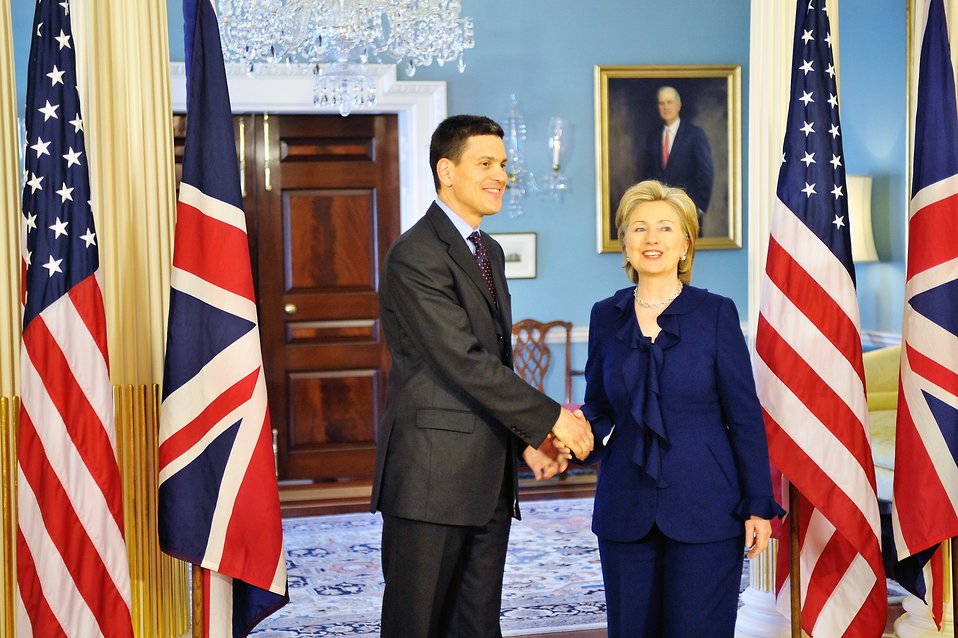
Secretary Clinton Meets With United Kingdom Foreign Minister

U.S. Secretary of State Hillary Rodham Clinton hosts a bilateral meeting with United Kingdom Foreign Secretary David Miliband in the Treaty Room of the U.S. Department of State on May 12, 2009.